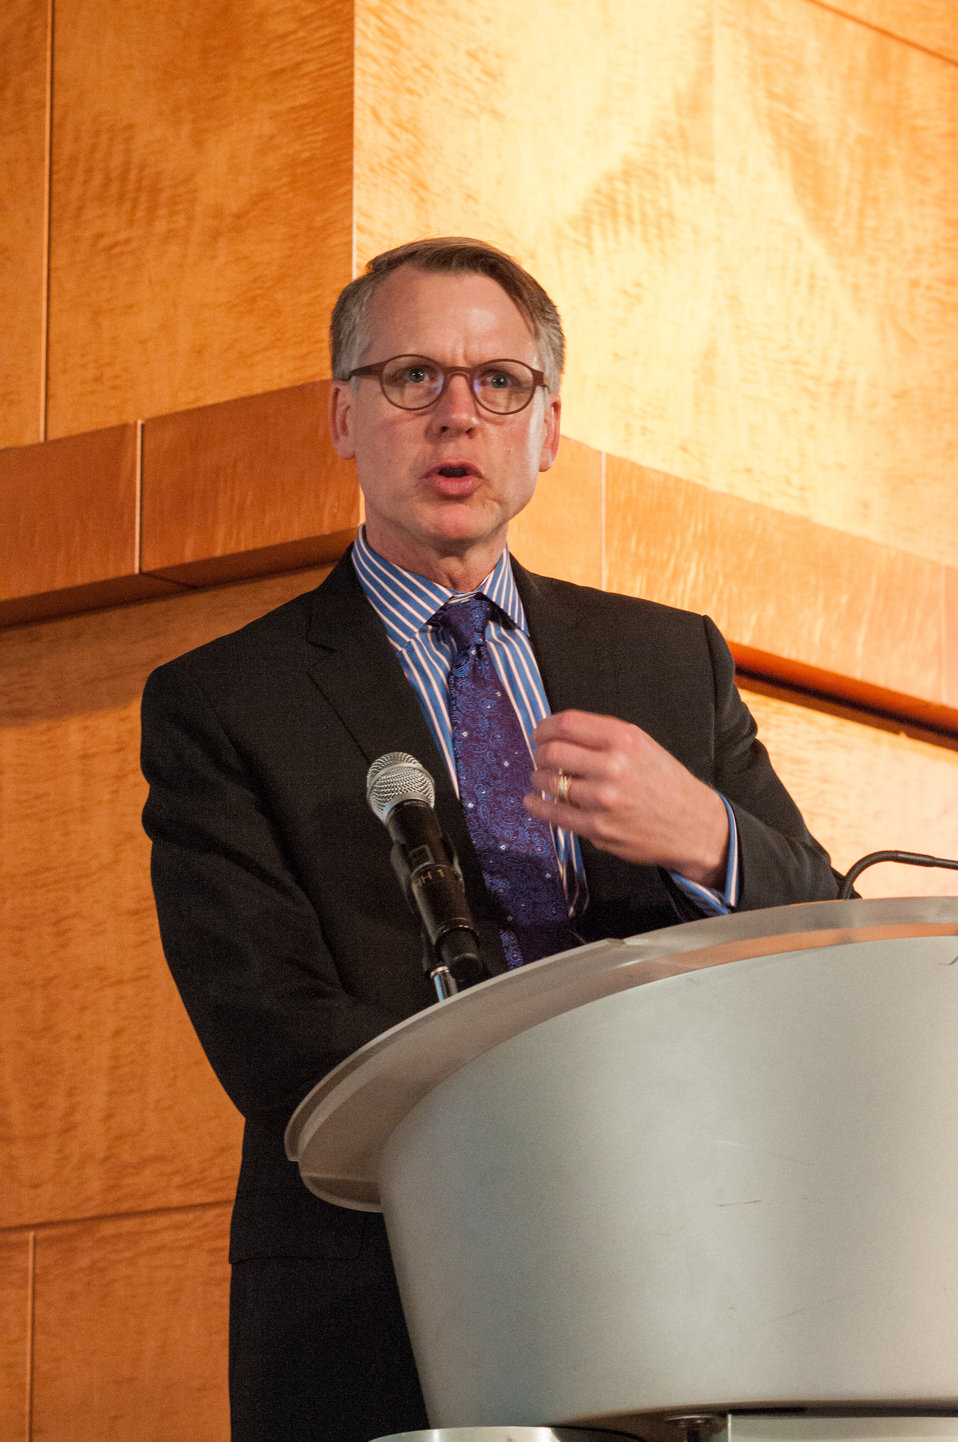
World Bank Host and Master of Ceremonies Chris Vein introduced the speakers at the opening session of the G-8 International Conference on Open Data for Agriculture Washington, D.C. on Monday, Apr. 29, 2013. The conference launched a new 'virtual community' of Food, Agriculture, and Rural data on Data.gov-the U.S. Government's data sharing website-to catalogue America's publicly available agricultural data and increase the ability of the public to find, download, and use datasets that are generated and held by the Federal Government. The data community features a collection of more than 300 newly cataloged datasets, databases, and raw data sources related to food, agriculture, and rural issues from agencies across the U.S. Government. In addition to the data catalog, the virtual community shares a number of applications, maps and tools designed to help farmers, scientists and policymakers improve global food security and nutrition.